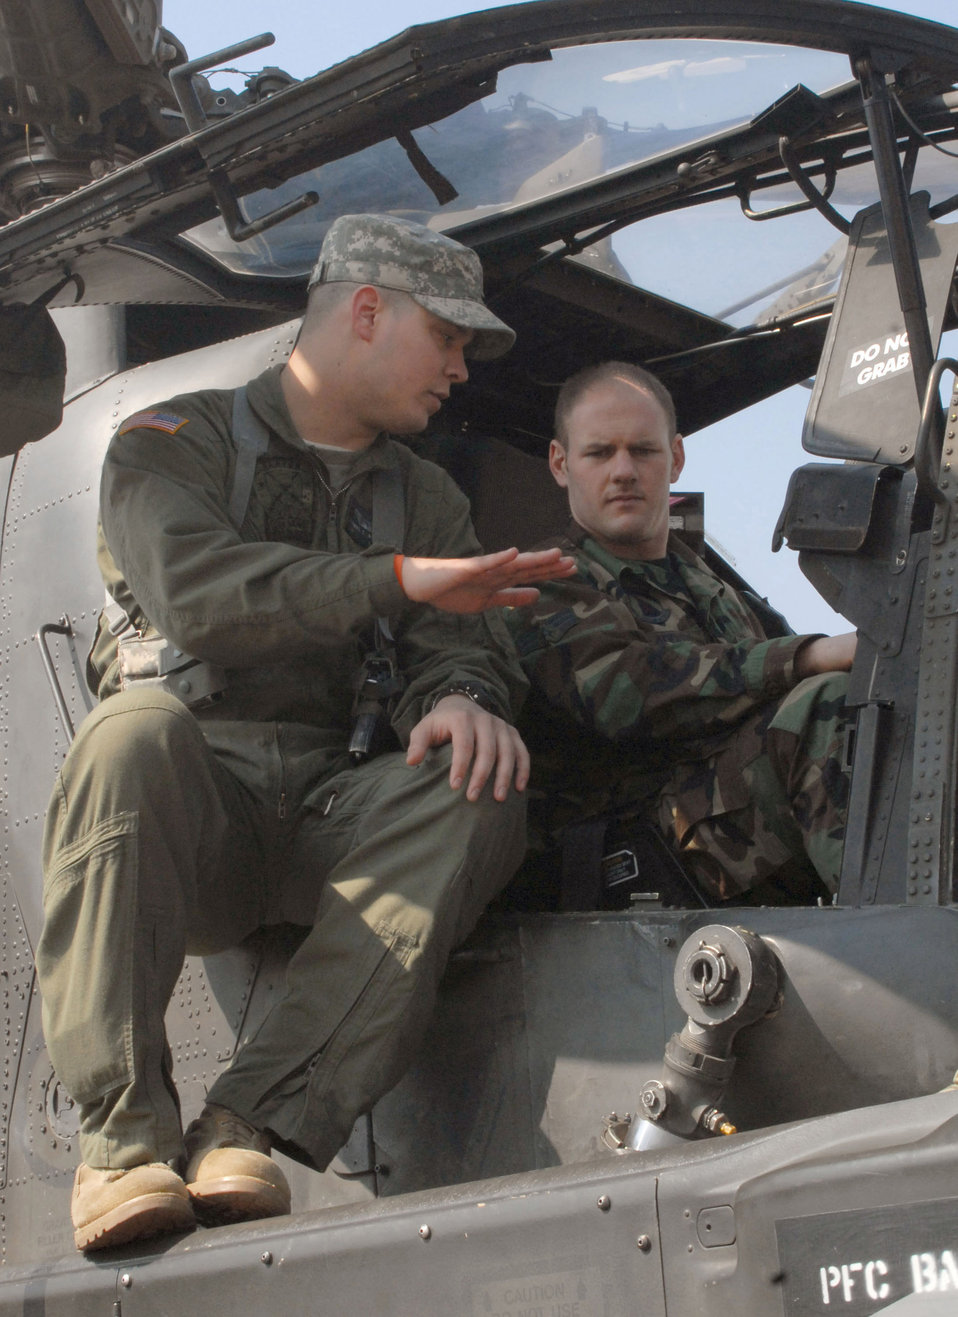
Army shows off Apache at Kunsan

Chief Warrant Officer 2nd Class Thomas Weekley, a pilot with Charlie Company, 42nd Aviation Battalion, from Camp Humphreys, South Korea, discusses the AH64D Apache helicopter with Senior Airman Richard Addis, an electronic warfare craftsman with the 8th Maintenance Squadron at Kunsan Air Base, South Korea, during a static display of the aircraft March 10. Army aviators brought the helicopter to Kunsan to inform Airmen about the aircraft and the Army's current mission in South Korea.